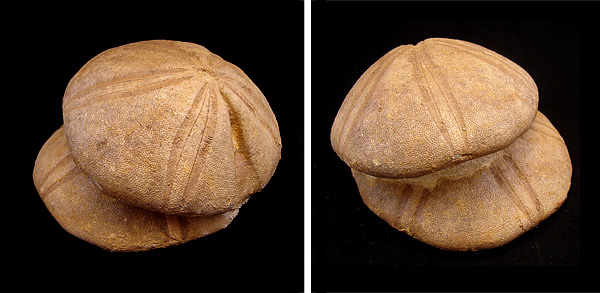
jonathan dempsey unidentified fossil echinoderms